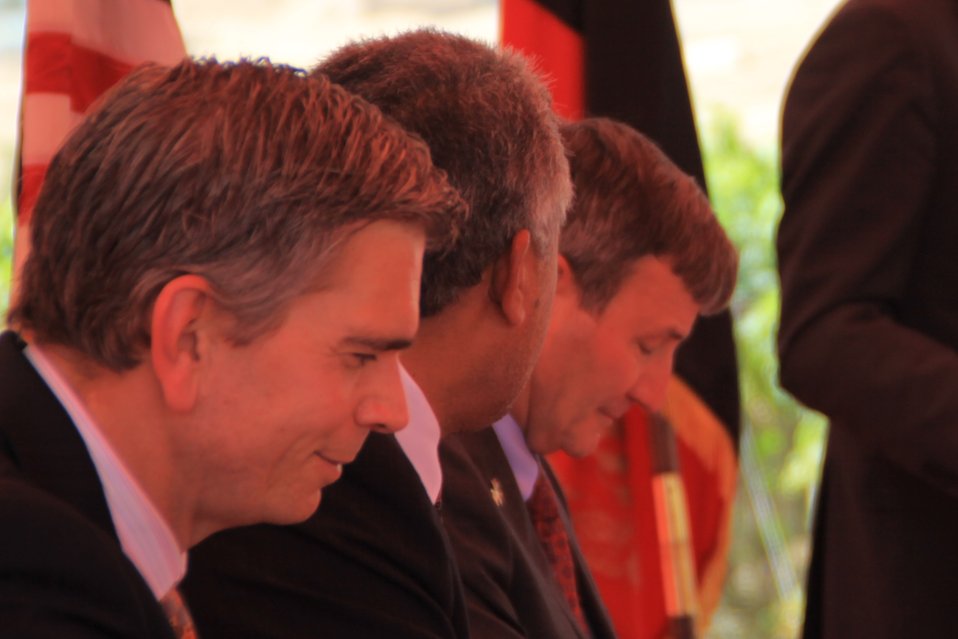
Badam Bagh Farm